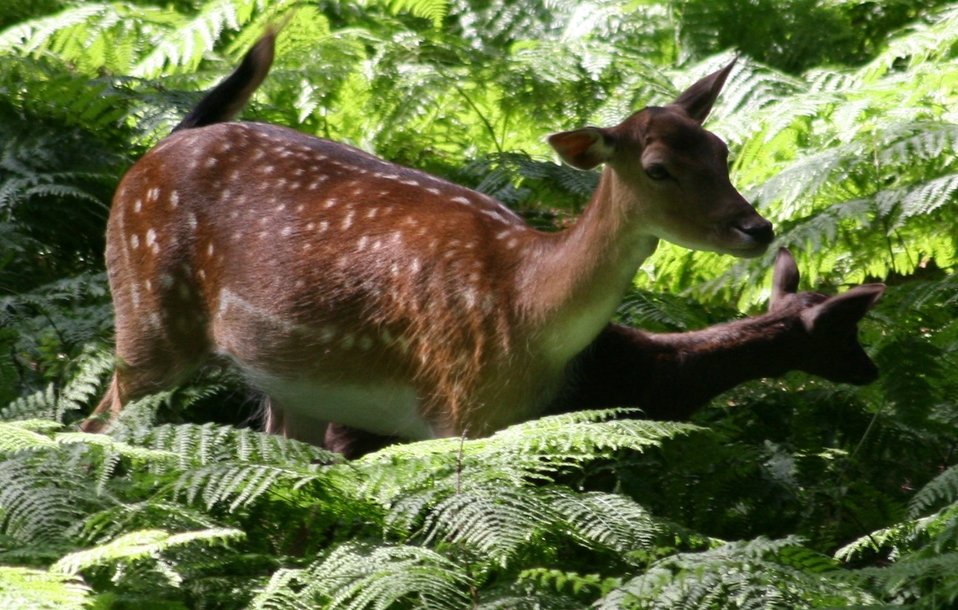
Deutsch: Damhirschkuh (Dama dama) mit dumklem Jungtier im Wildgehege in den Süchtelner Höhen.